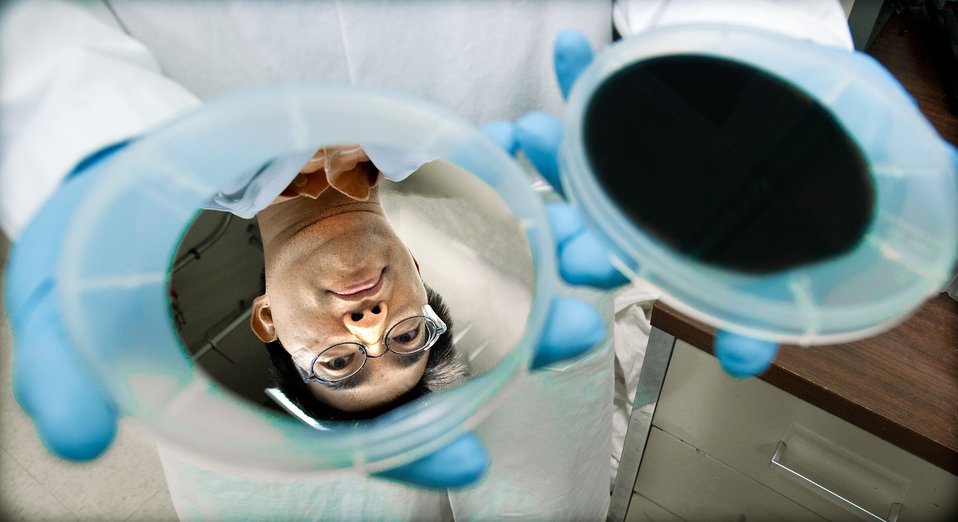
NREL scientist is reflected in a highly reflective untreated silicon wafer (left) compared to a silicon wafer that has been etched (right). The simple etching process creates a nano porous silicon surface creating 10 nano-meter diameter holes in the surface. The acid etches holes, absorbing light and turning the wafer black.